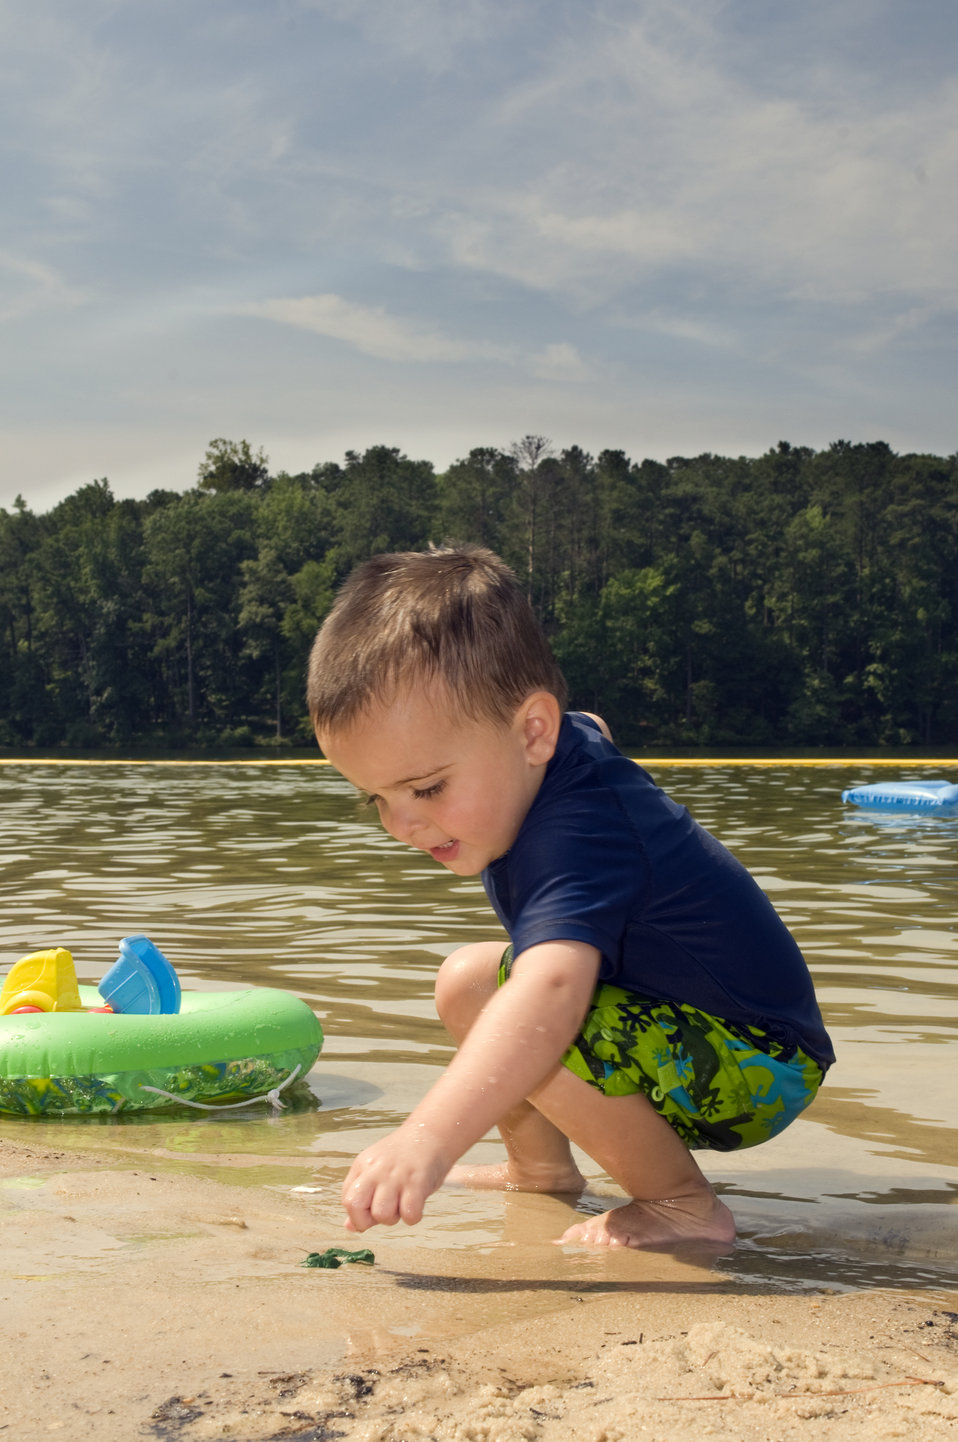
During this young boy's day out to the lake with his toys, he was pictured here bent over picking up one of his play-pieces from the wet sand. His little green inflatable raft can be seen in the near background, and in the distance, another blue-colored inflatable raft can be seen floating on the water. Sunscreen had been applied to his minimally-exposed skin, and he was wearing a darkly-colored shirt in order to prevent overexposure to the sun's harmful ultraviolet rays.